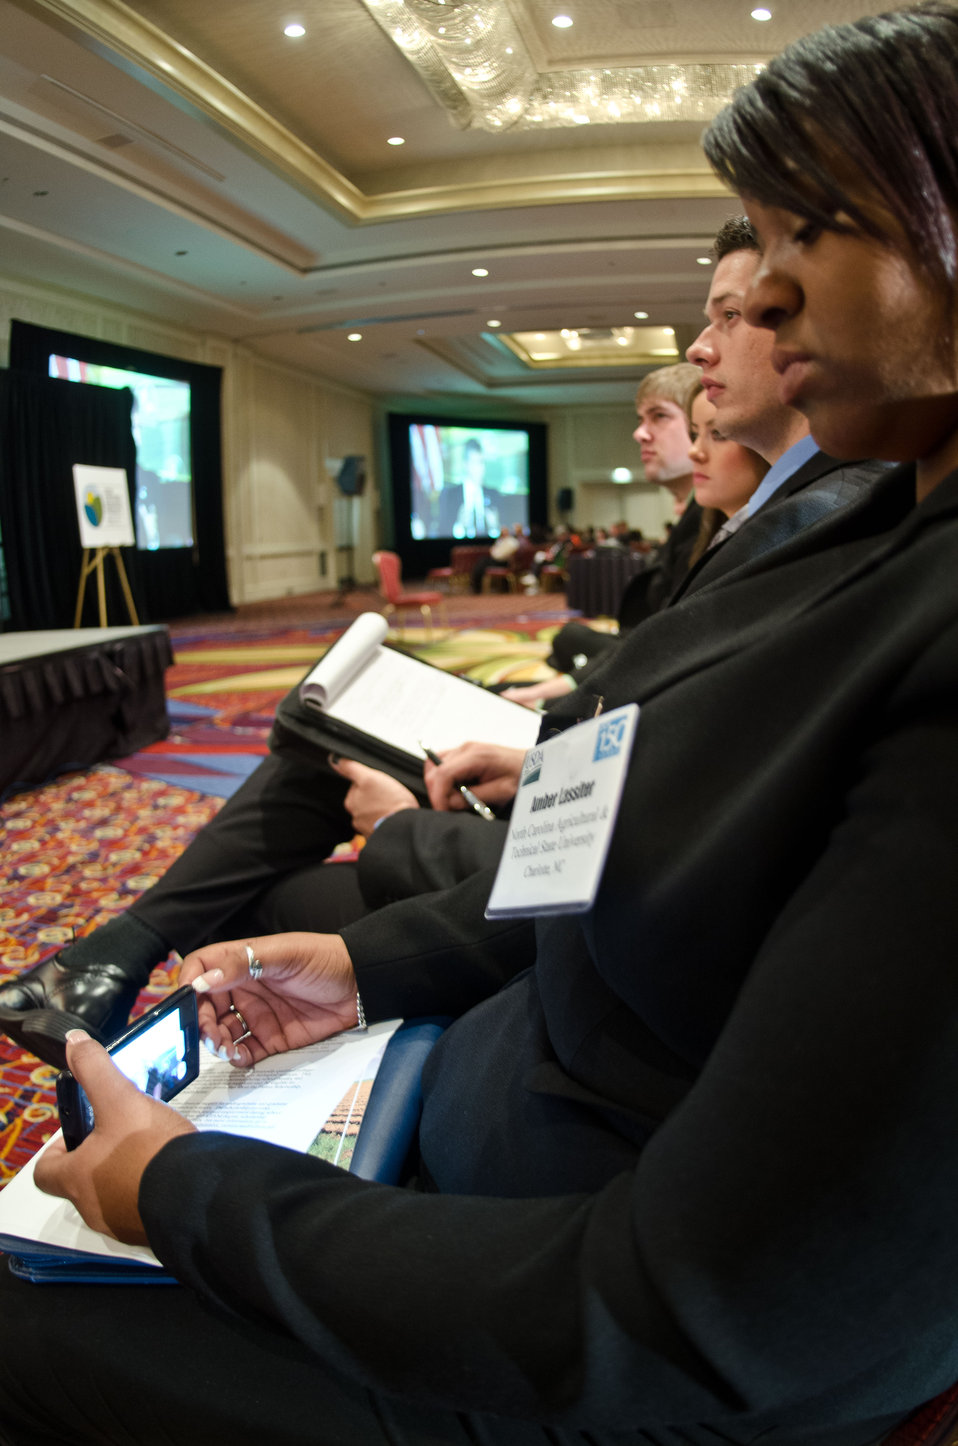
North Carolina Agriculture & Technical State University student Amber Lassiter (right) records comment from 7 former Secretaries of Agriculture seated on the plenary panel “Visions of the Future” hosted by current Agriculture Secretary Tom Vilsack at the 2012 Agricultural Outlook Forum, “Moving Agriculture Forward” in Arlington, VA, on Thursday, February 23, 2012.